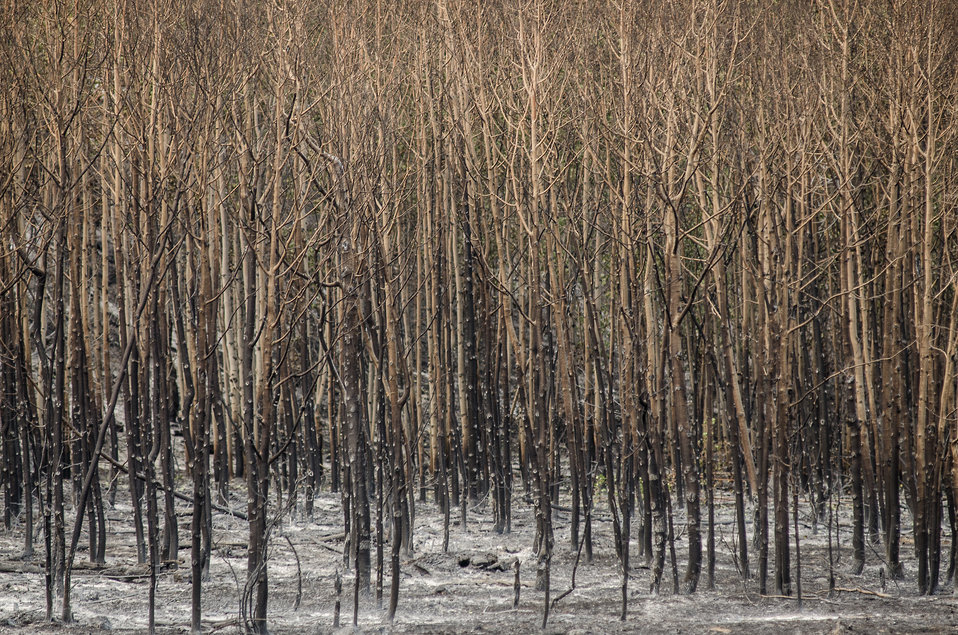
Scorched trees from Beaver Creek Fire, west of Hailey, ID for the fire fighting teams from U.S. Department of Agriculture (USDA) Forest Service (FS) and Sawtooth National Forest and Bureau of Land Management (BLM) on Wednesday, Aug 21, 2013.